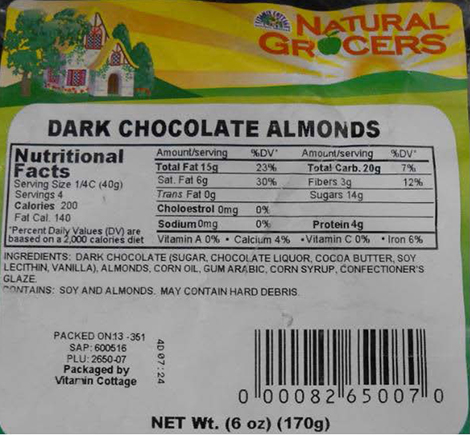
RECALLED – Dark Chocolate Almonds

February 7, 2014 – Product Recall – Natural Grocers by Vitamin Cottage Issues Allergy Alert on Undeclared Peanuts in Dark Chocolate Almonds.